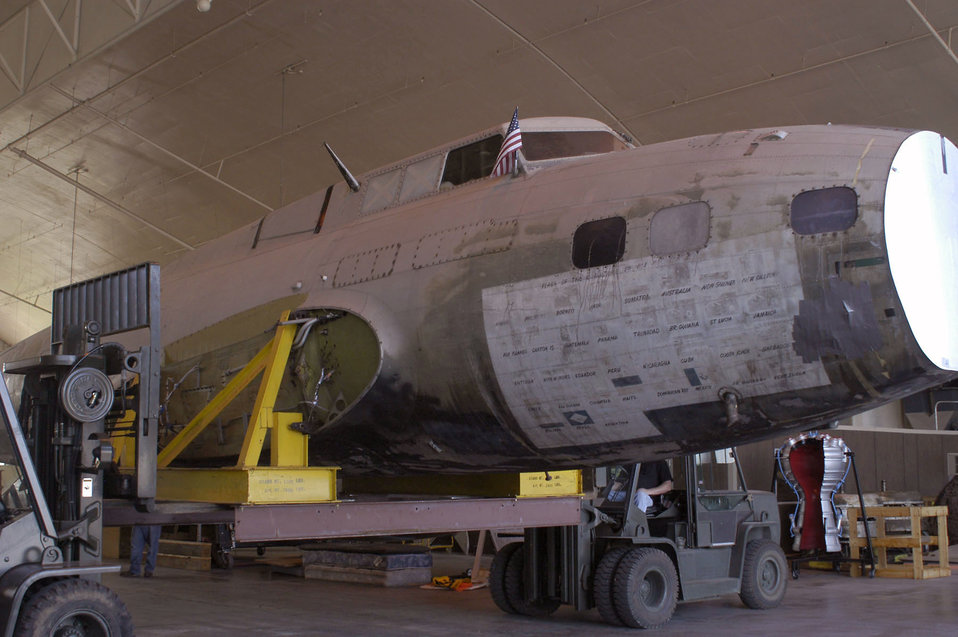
'The Swoose' finds new home at National Museum of the U.S. Air Force

Restoration crews work together to unload the fuselage of the B-17D The Swoose that recently arrived at the National Museum of the U.S. Air Force near Dayton, Ohio, from the National Air and Space Museum in Washington D.C.